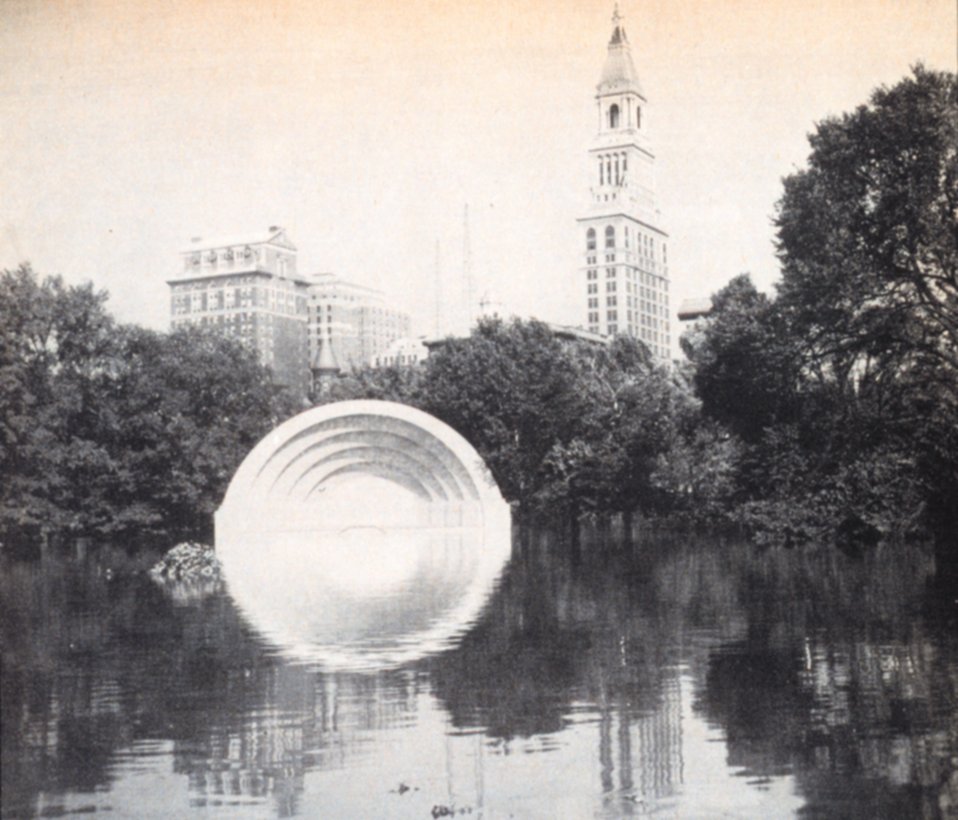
The Music Shell in Bushnell Park which was now functioning as a reflecting pool. Flooding in the aftermath of the 1938 New England Hurricane.